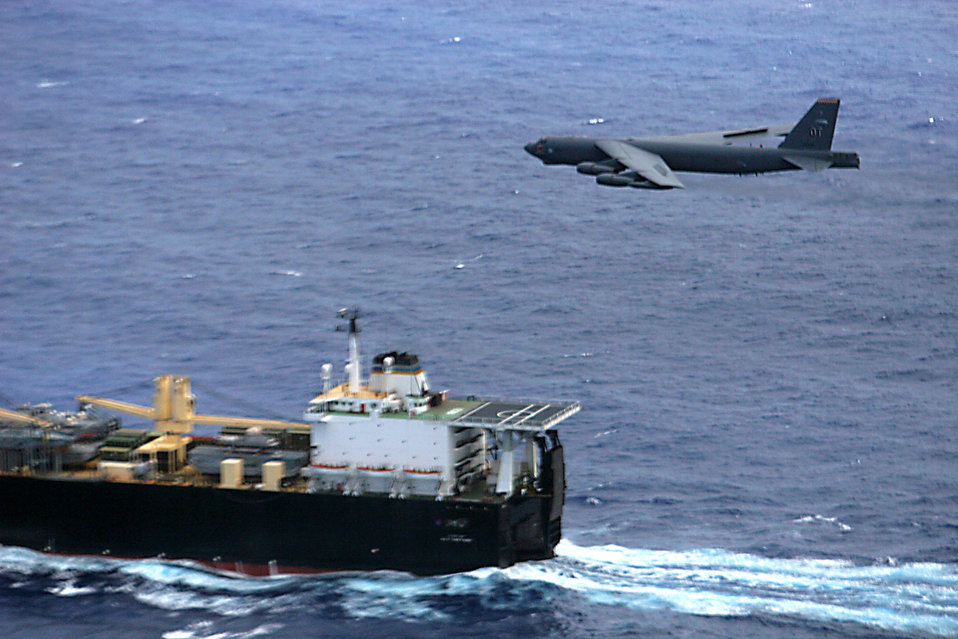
Barksdale Airmen recreate history

A 2nd Bomb Wing B-52H Stratofortress flies over the UNSN 2nd Lt John P Bobo, a maritime pre-positioning ship, during a maritime intercept training mission, Aug 24.